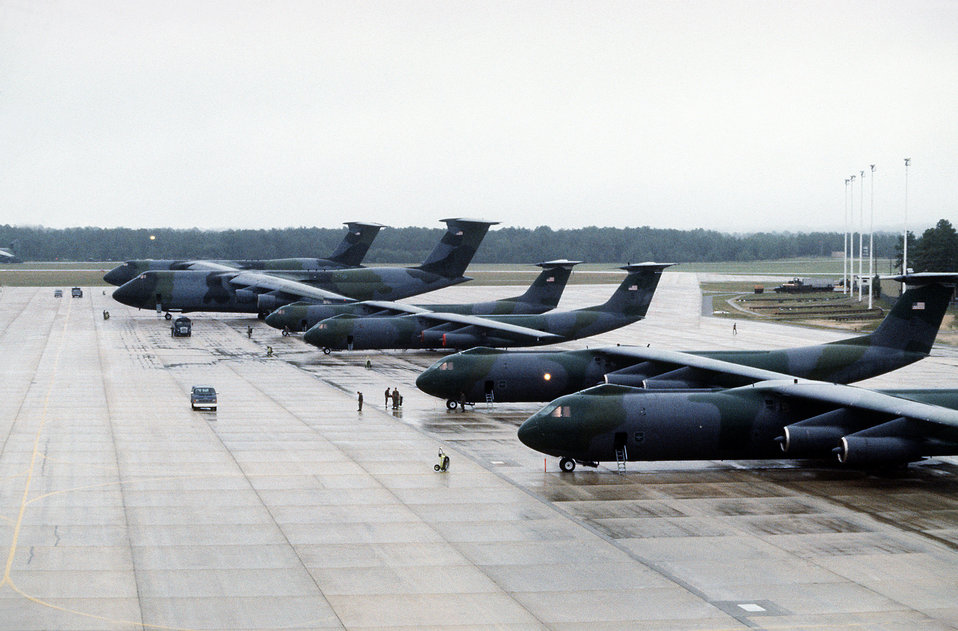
A C-141B Starlifter and two C-5A Galaxy aircraft

1990's -- C-141B Starlifter aircraft, foreground, and two C-5A Galaxy aircraft stand on the flight line as they are readied for deployment to Saudi Arabia during Operation Desert Shield.